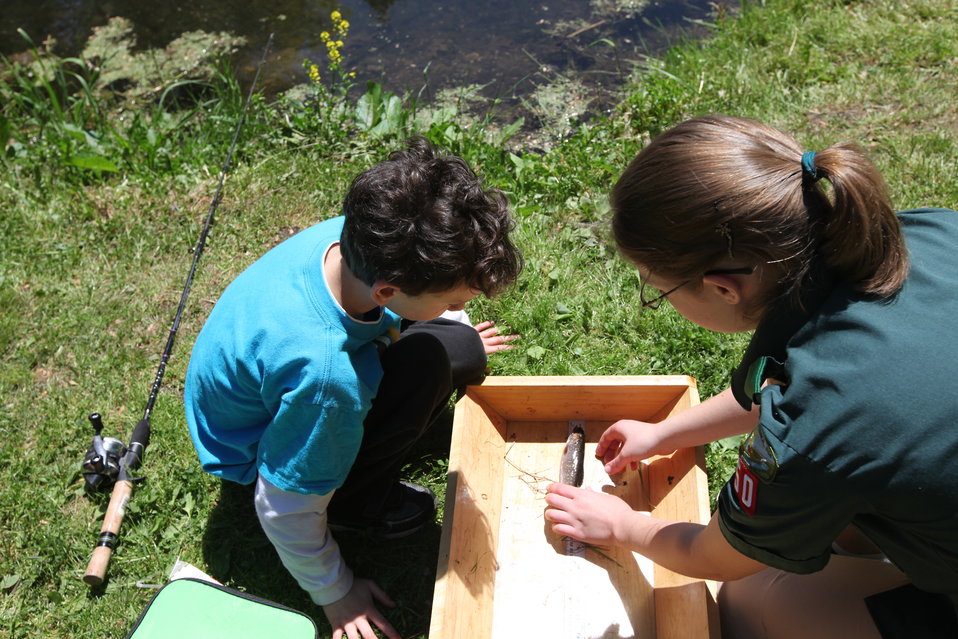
Youth Fishing Derby 2012

Megan Nagel/USFWS